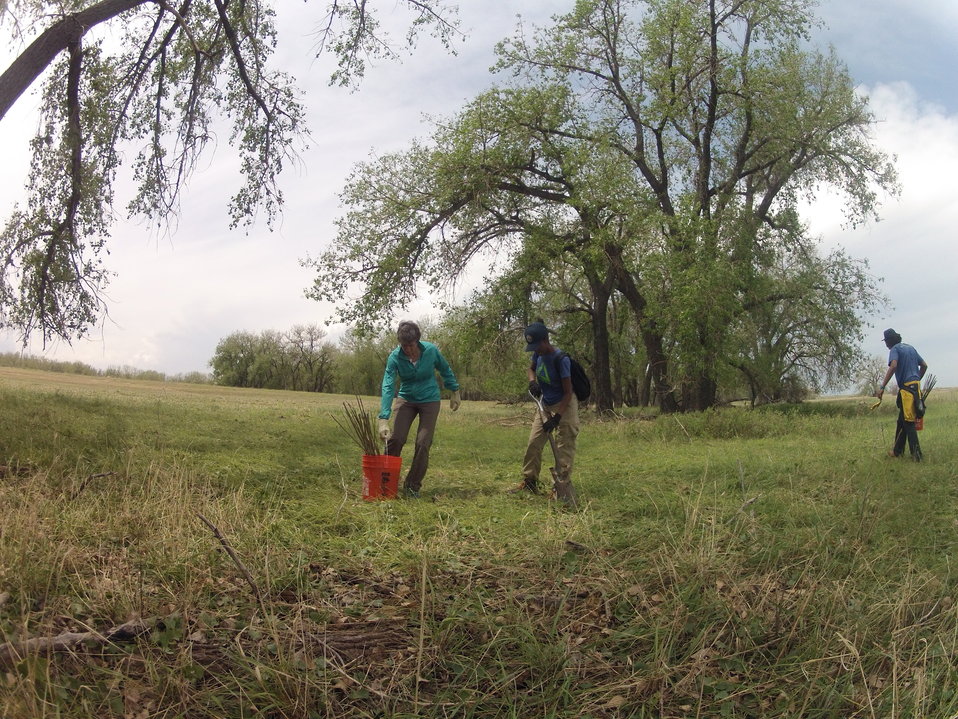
Secretary Jewell Announces $6.7 for Youth Conservation Jobs

Interior Secretary Sally Jewell helps local youth conservation groups plant cottonwood trees at Rocky Mountain Arsenal National Wildlife Refuge.